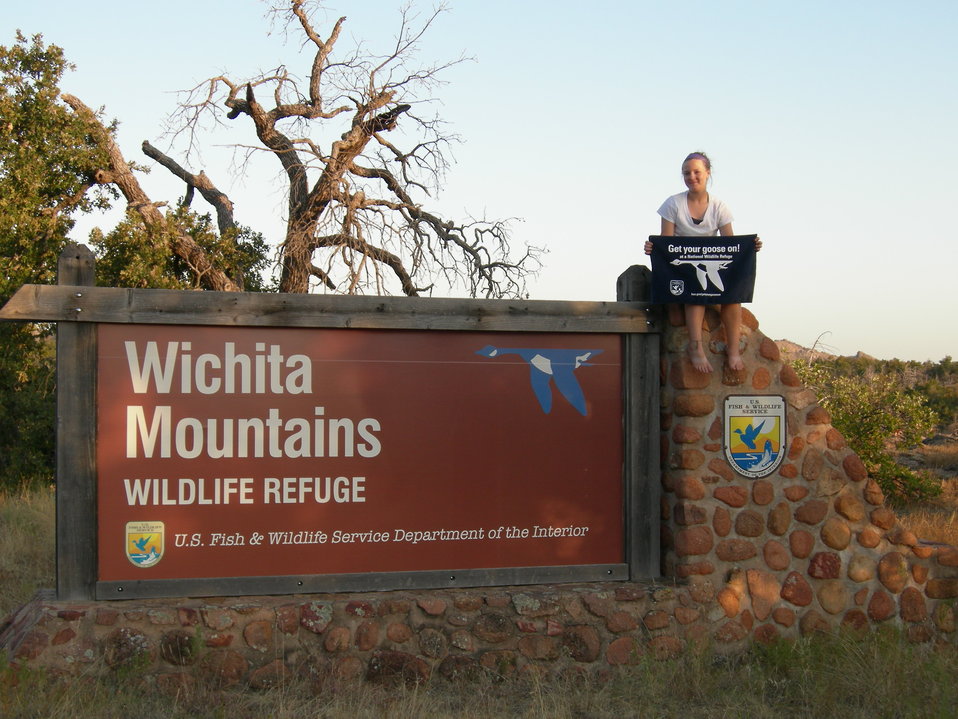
Get Your Goose On!

Wichita Mountains National Wildlife Refuge in Oklahoma.